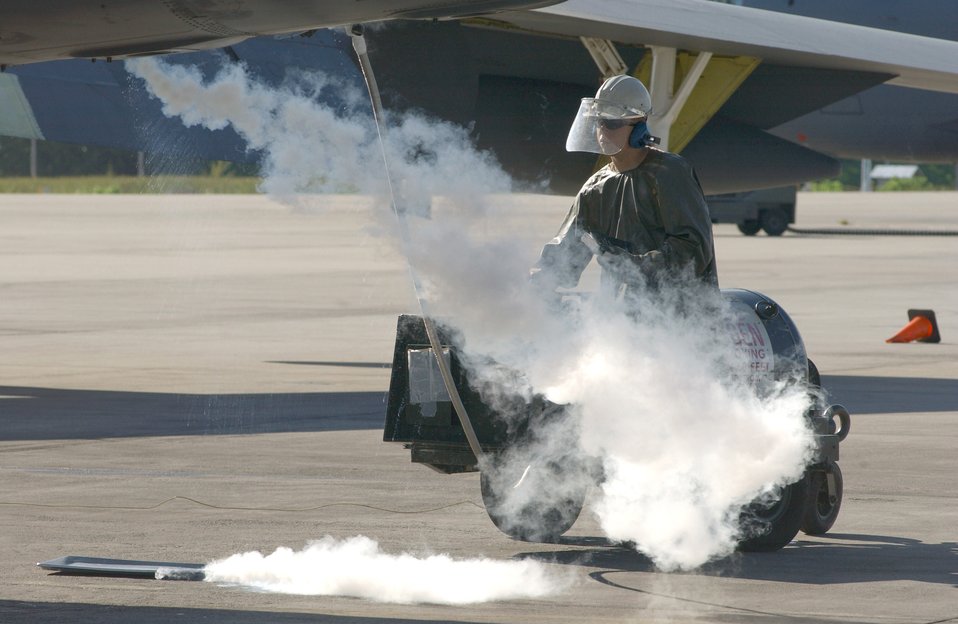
A chemical effect

OPERATION ENDURING FREEDOM -- Airman 1st Class Nathan Jacobson performs liquid oxygen service to a B-52 Stratofortress at a forward-deployed location May 16 in preparation for a sortie supporting operations Iraqi Freedom and Enduring Freedom. He is a crew chief assigned to the 40th Expeditionary Maintenance Squadron.